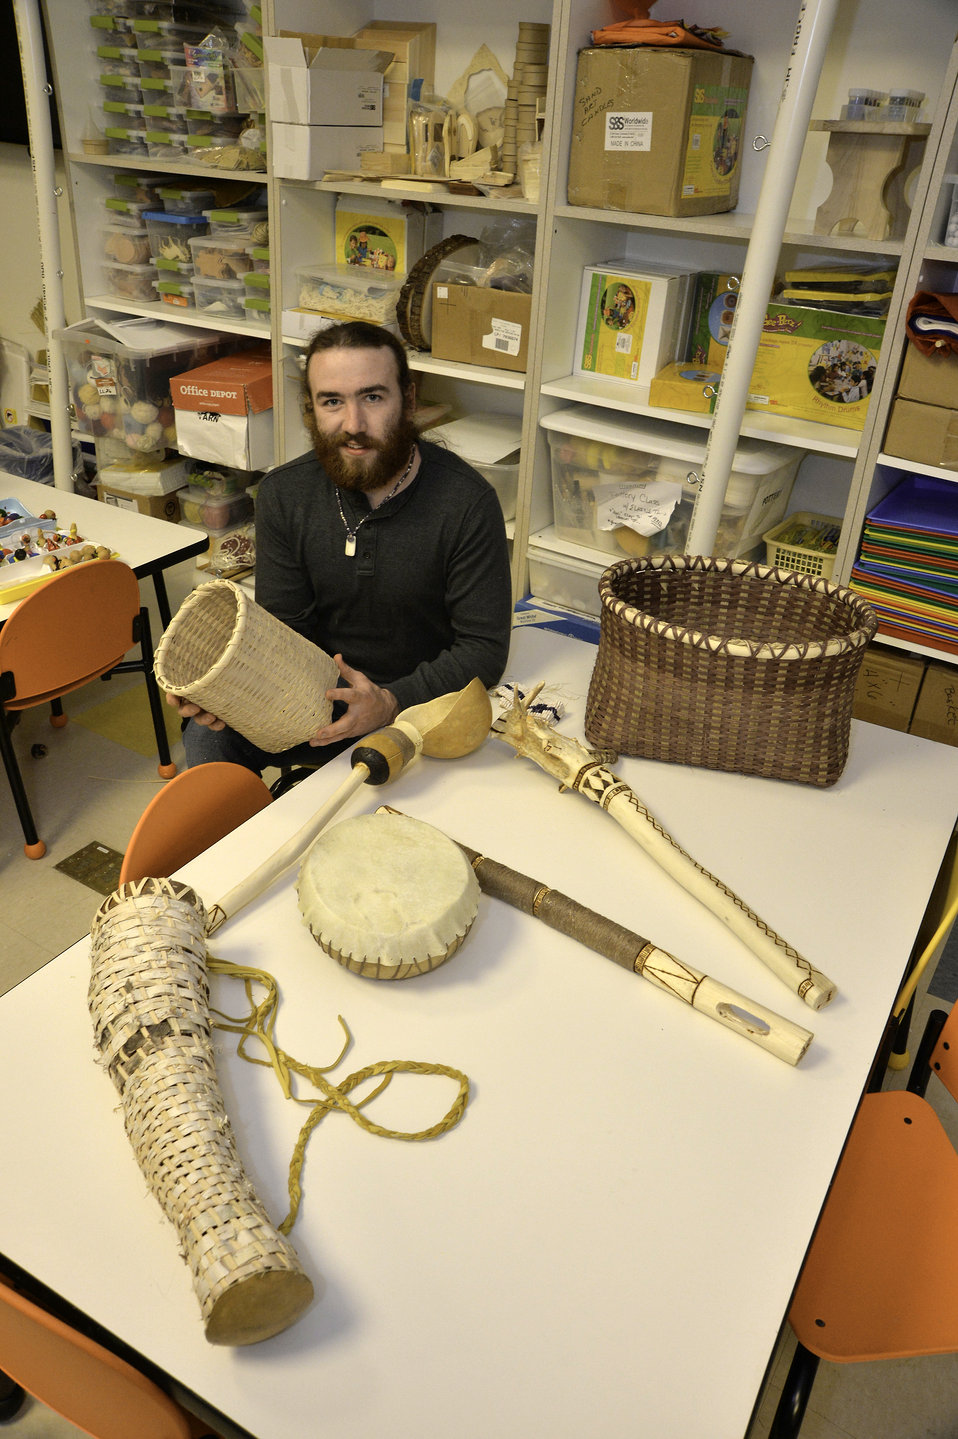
Mohegan members work on Native American crafts at the Arts and Crafts center in the Mohegan Tribe Community Center and Government Building in Uncasville, CT on Nov. 19, 2013. A U.S. Department of Agriculture (USDA) Rural Development (RD) Community Facility Loan was provided to the Mohegan Tribe for the construction of the Mohegan Tribe Community Center and Government Building in Uncasville, CT. USDA’s RD Community Facilities Programs makes and guarantees loans to develop essential community facilities in rural areas and towns of up to 20,000 in population. Loans and guarantees are available to public entities such as municipalities, counties, parishes, boroughs, and special-purpose districts, as well as to non-profit corporations and tribal governments. The 160,000 square foot building Center hosts an exhibit celebrating federal recognition, history of Mohegan Chiefs, a new Library and Archives space, new Arts and Crafts room, a new gymnasium, and a new community room to enjoy food and family. The Center will continue the Tribe’s plan for growth and meeting the needs of its members.